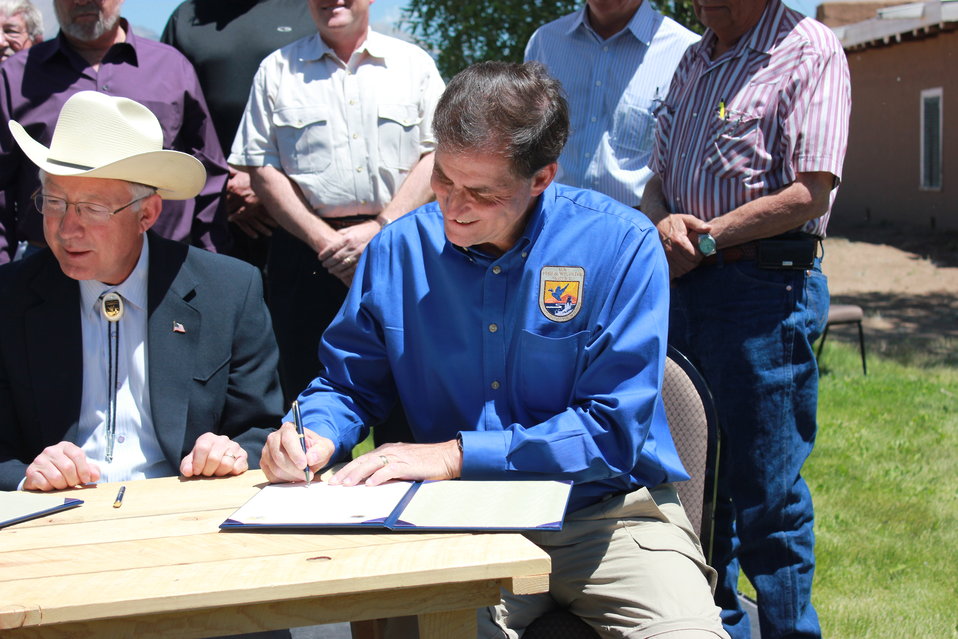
Historic Conservation Easement in Sangre de Cristo Mountains